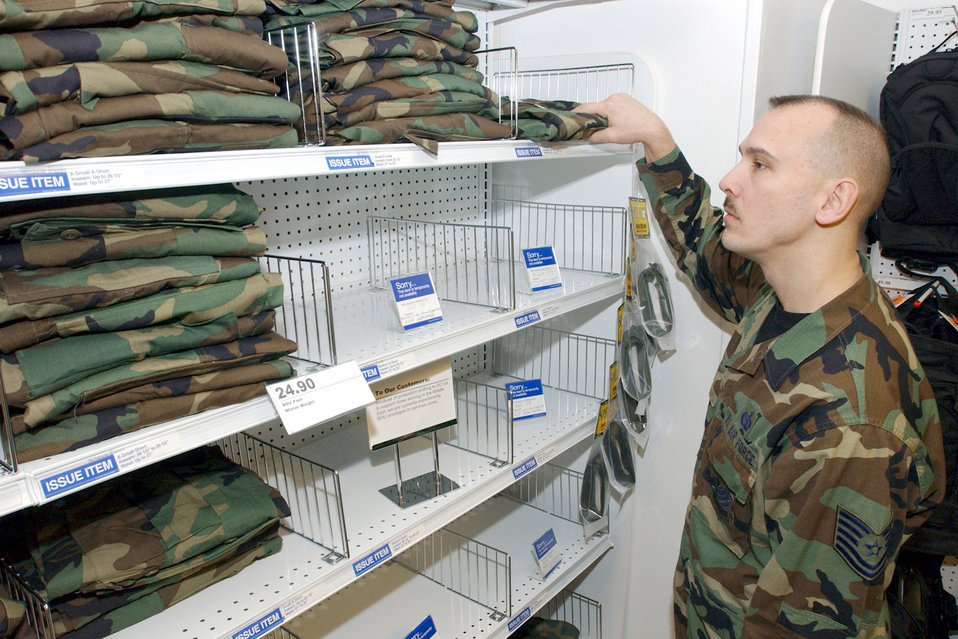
BDU blues

FAIRCHILD AIR FORCE BASE, Wash. -- Tech. Sgt Durward Till searches through the short supply of battle dress uniforms in the military clothing sales store here March 1. Uniform backorders are affecting the Air Force worldwide, and officials do not expect the shortage to end until August. Sergeant Till is a visual information journeyman with the base's 92nd Communications Squadron.